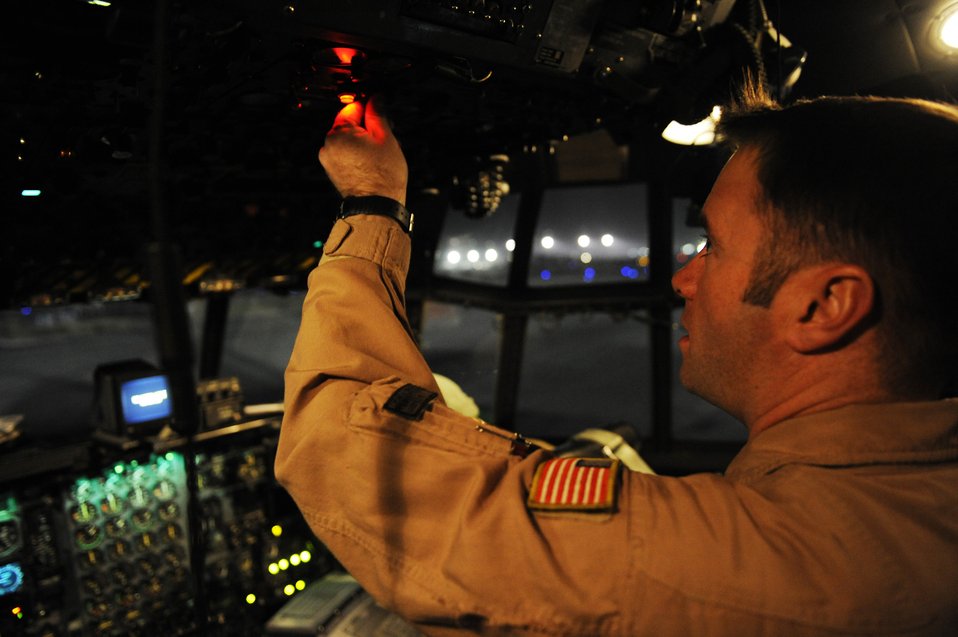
Getting ready for takeoff

Master Sgt. Ken Lavin conducts pre-flight checks aboard a C-130 Hercules before a mission Jan. 3, 2011, at Bagram Airfield, Afghanistan. C-130s are able to land on more types of runways, making them invaluable when moving passengers and cargo. Sergeant Lavin is a member of the 774th Expeditionary Airlift Squadron.